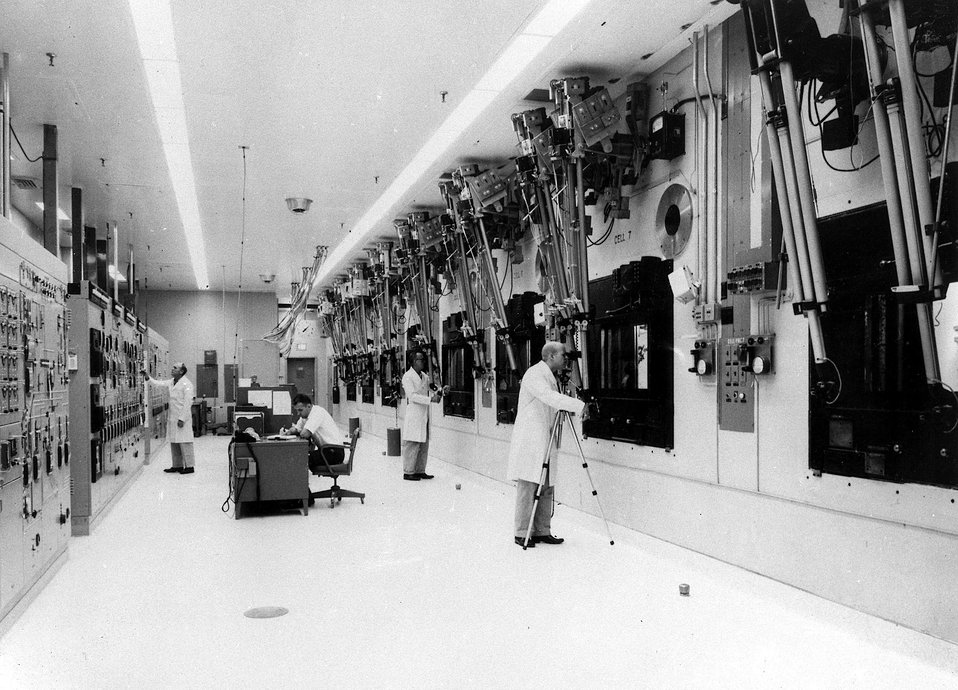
This photo shows the operating area in the Transuranium Processing Plant (TRU) Facility. c. 1967